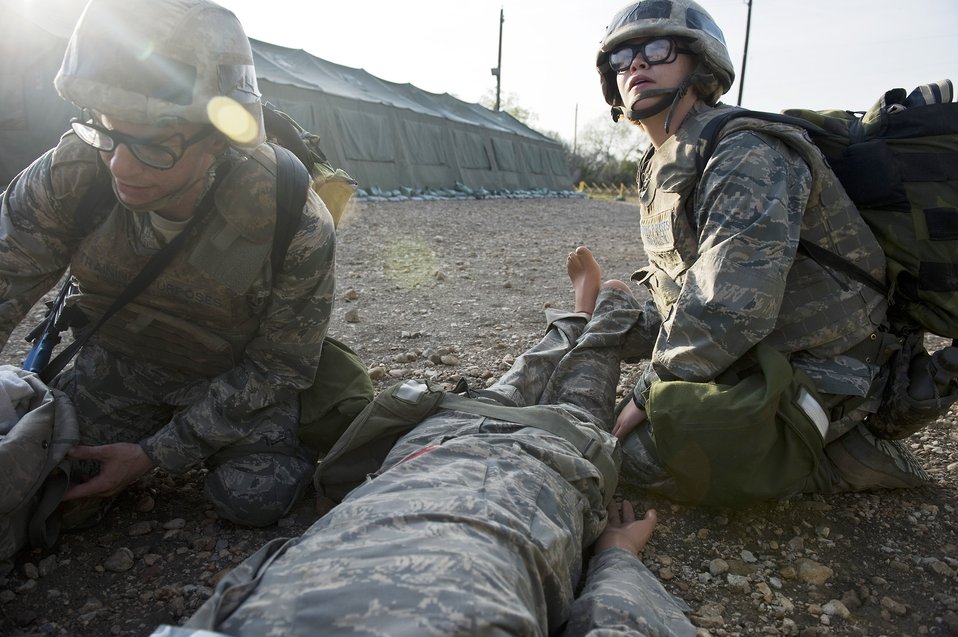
Trainees conquer the BEAST

Two basic trainees demonstrate self aid buddy care on a mannequin during an exercise at the Basic Expeditionary Airman Training, or BEAST, course Sept. 2, 2009, at Lackland Air Force Base, Texas. The BEAST introduces Airmen to the joint expeditionary concept and immerses them in deployment scenarios.